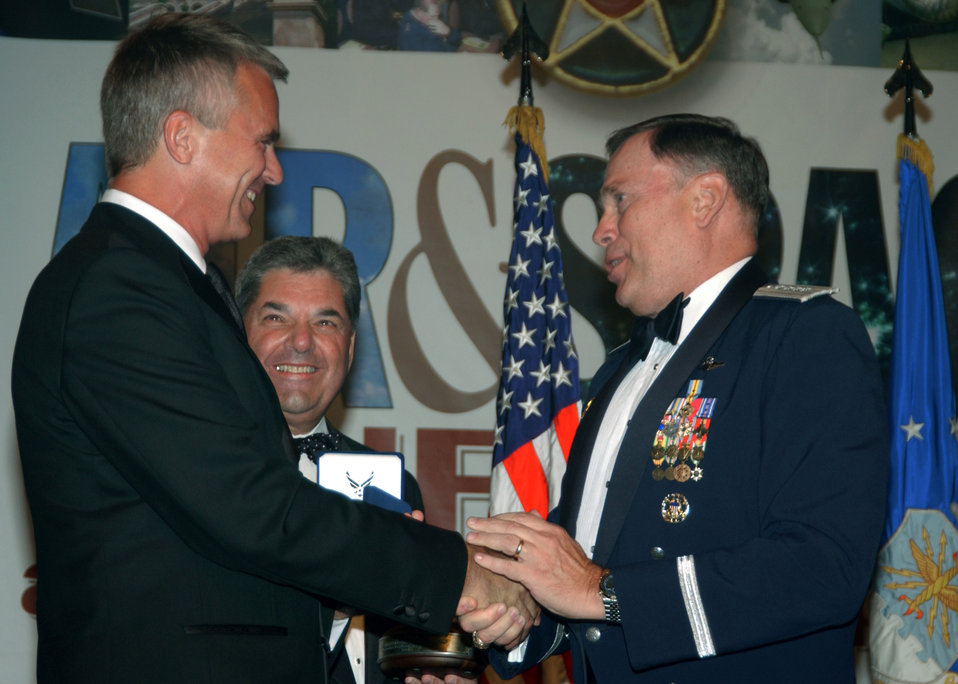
Air Force honors SG-1 actor, producer

WASHINGTON -- Air Force Chief of Staff Gen. John P. Jumper recognizes Richard Dean Anderson for his role in the